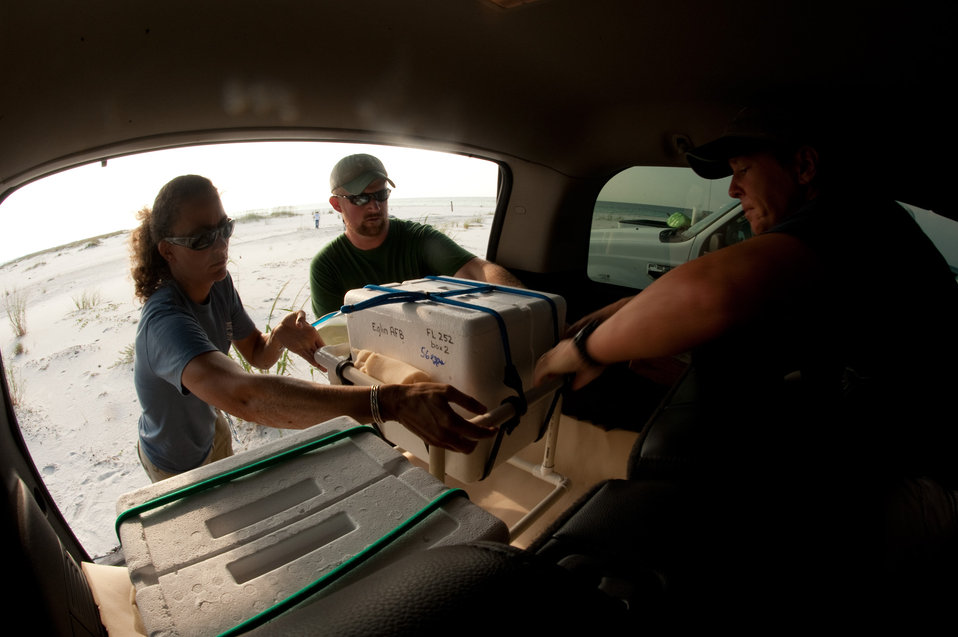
Turtle Eggs avoid Gulf Oil Danger

Kathy Gault (right), Dustin Varble (center) and Kelley Anderson-Nunley (left) slowly and gently set a Styrofoam cooler containing Loggerhead sea turtle eggs, into a vehicle at Eglin Air Force Base, Florida, on August 9, 2010. Mr. Varble and Ms. Gault are endangered species biologists with the 96th Civil Engineer Squadron and Ms. Anderson-Nunley is a contract wildlife technician with Colorado State University. The cooler is sitting on elastic bands of a shipping frame to soften the ride. Because of the critical attachment of the embryo to the inside of the eggshell, the eggs must be gently moved. With equal care the transportation to the Atlantic coast is critical and gentle. The eggs will then be carefully driven to a U.S. Fish and Wildlife Department office in Panama City, where a specialized FedEx vehicle will take it to a controlled climate facility on the Atlantic coast. They will be allowed to hatch in the cooler. Wildlife technicians will then release them into the ocean.